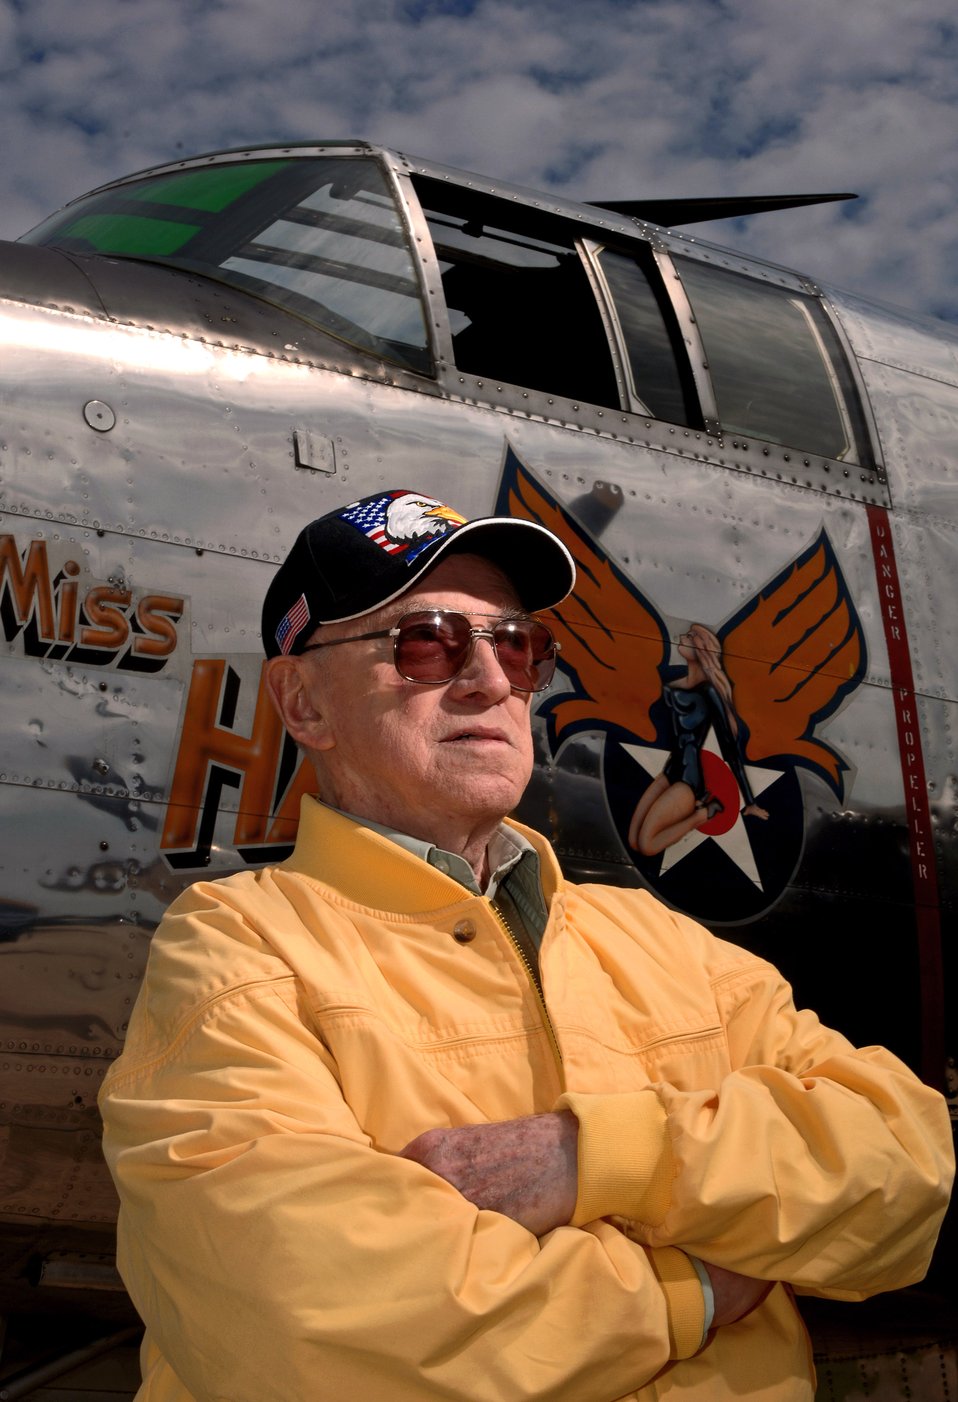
Army Air Corps veteran talks about war experience at air show

World War II veteran Robert McNally stands before the